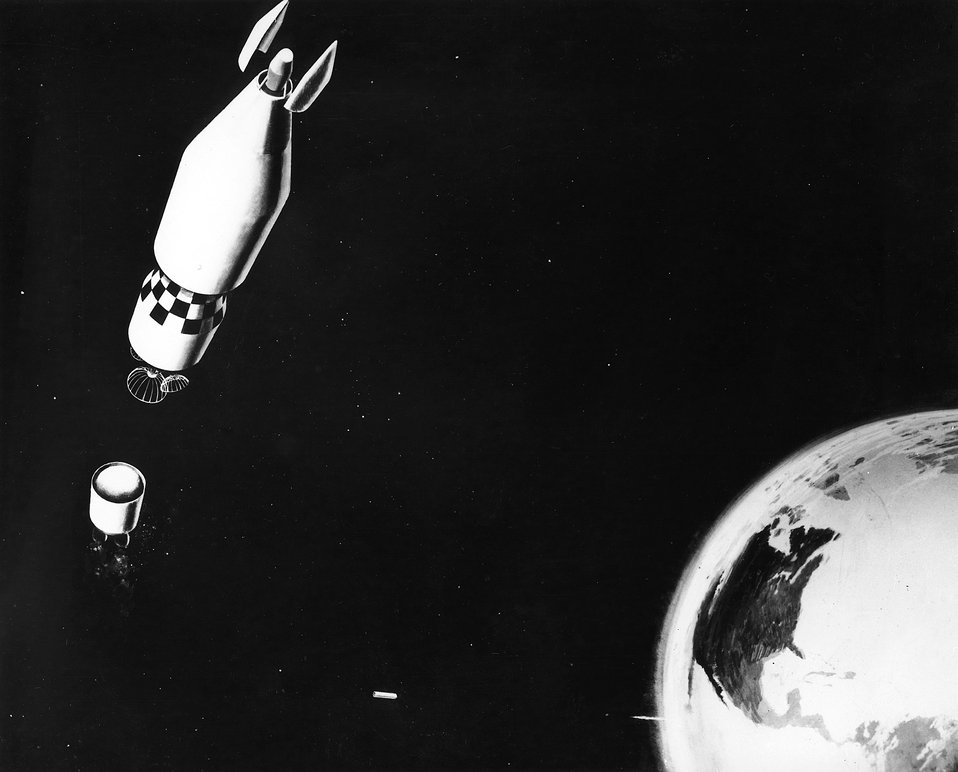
Artist's conception of a three-stage space vehicle with a SNAP-2 reactor located in the nose of the third stage. The second stage of the vehicle is shown trailing, and the first stage is shown at the lower center.